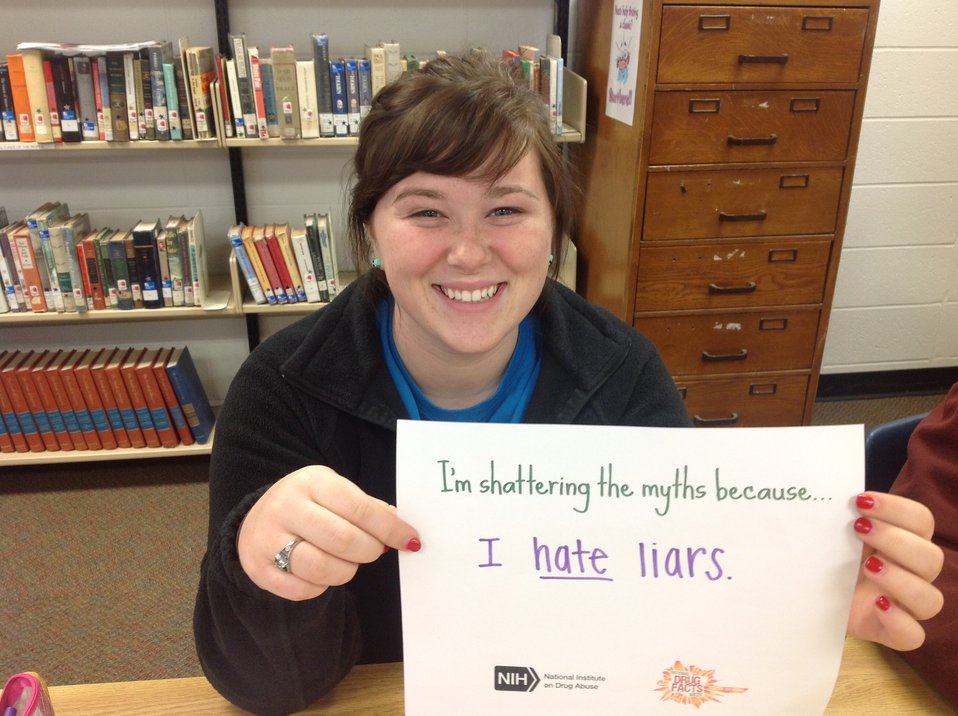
I'm Shattering the Myths Because...

Teenagers from the Van Buren County SAFE Coalition's, Youth Leadership Council (YLC) in Keosauqua, Iowa participate in various events during National Drug Facts Week, 2014.